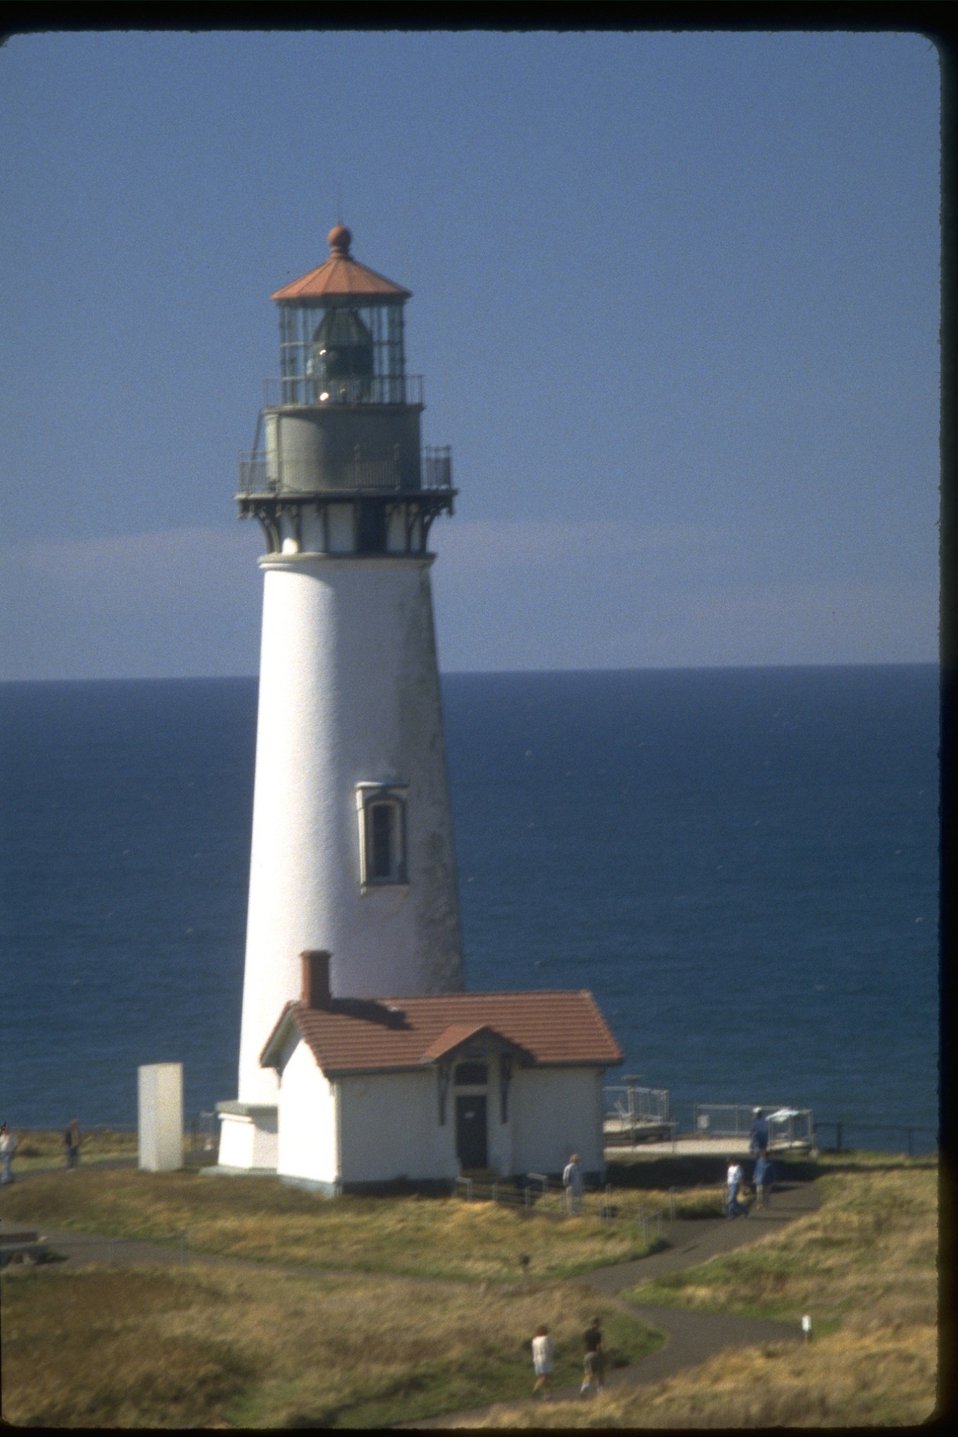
Yaquina Head ONA lighthouse.